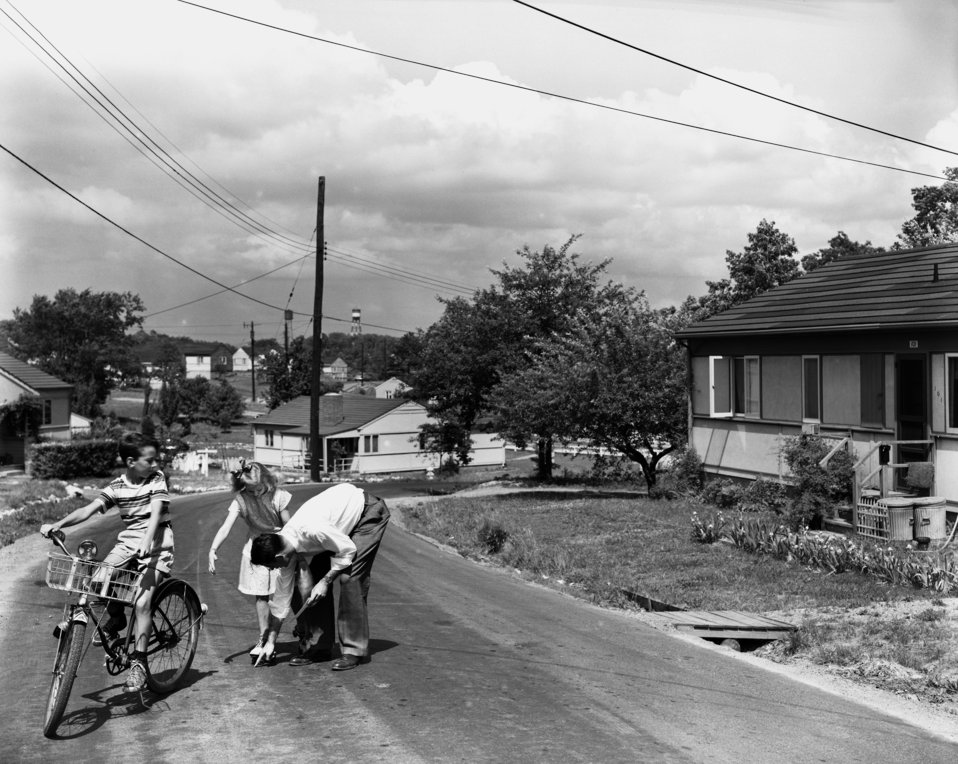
Setting up photo for Saftey Billboard in Oak Ridge 1948

5105b DOE photo Ed Westcott May 1948 Oak Ridge Tennessee